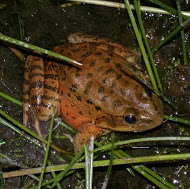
California red-legged frog

Scientific name: Rana draytonii
Staus: Threatened